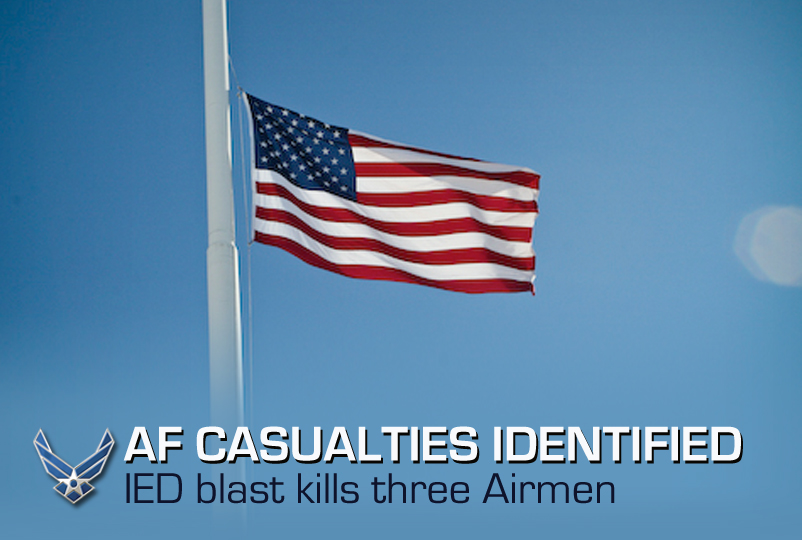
AF casualties identified